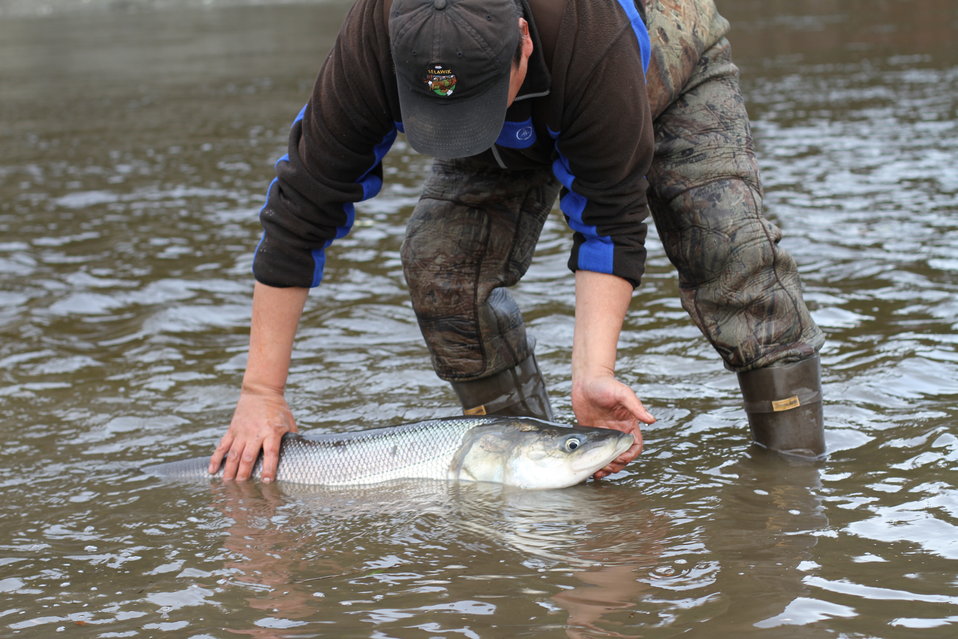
Selawik River sheefish

Mature sheefish (also called inconnu). This fish is part of the upper Selawik River spawning population. After spawning in Sept/Oct, these fish head back downstream to overwinter in Selawik Lake/Hotham Inlet. USFWS / Katrina Mueller